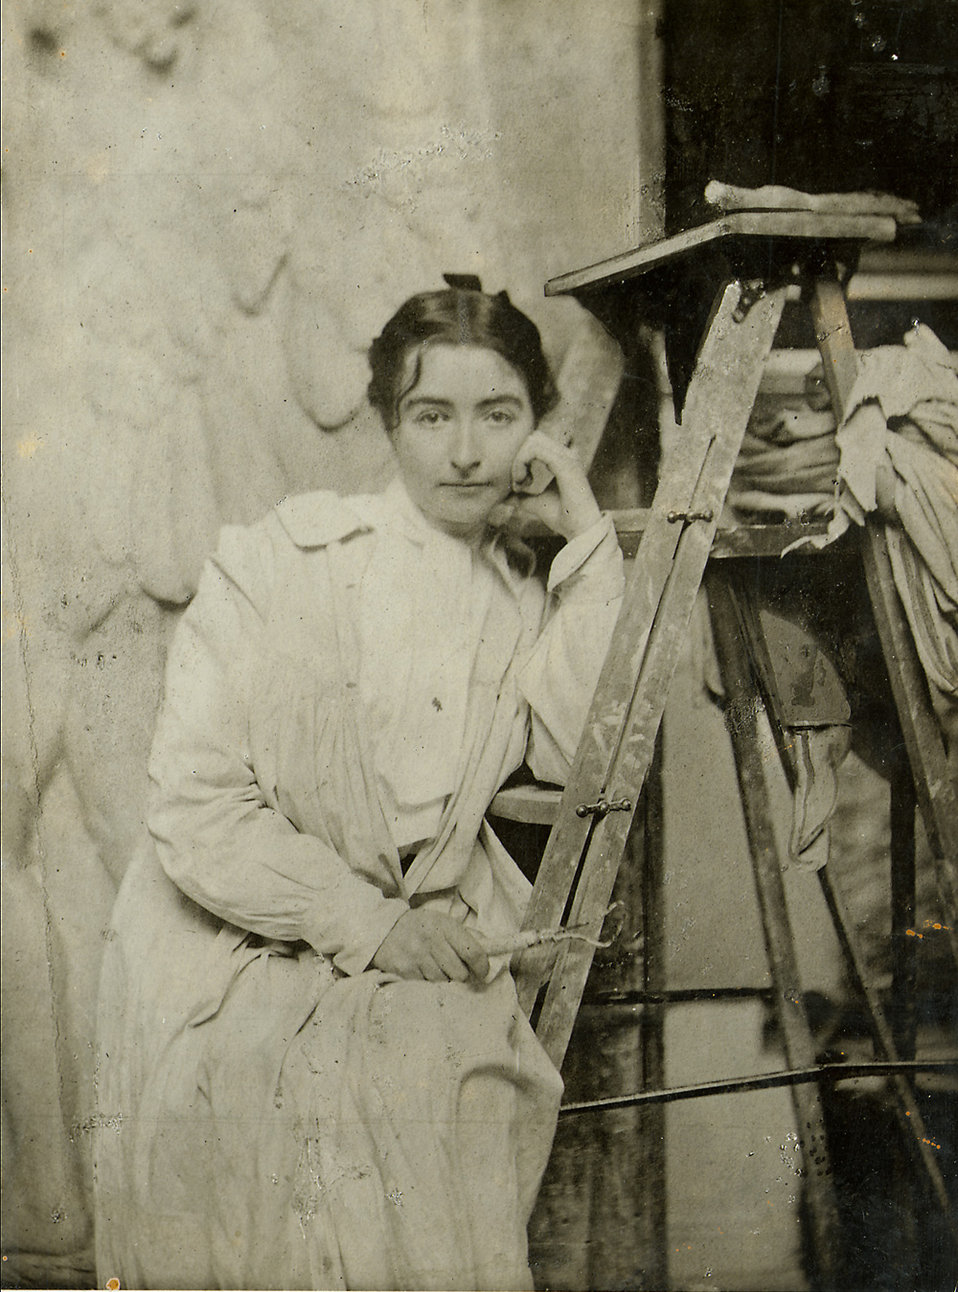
Helen Farnsworth Mears (1878-1916) - Women Artists

Sculptor, Marble statue of Frances E. Willard of Illinois for the National Statuary Hall Collection.